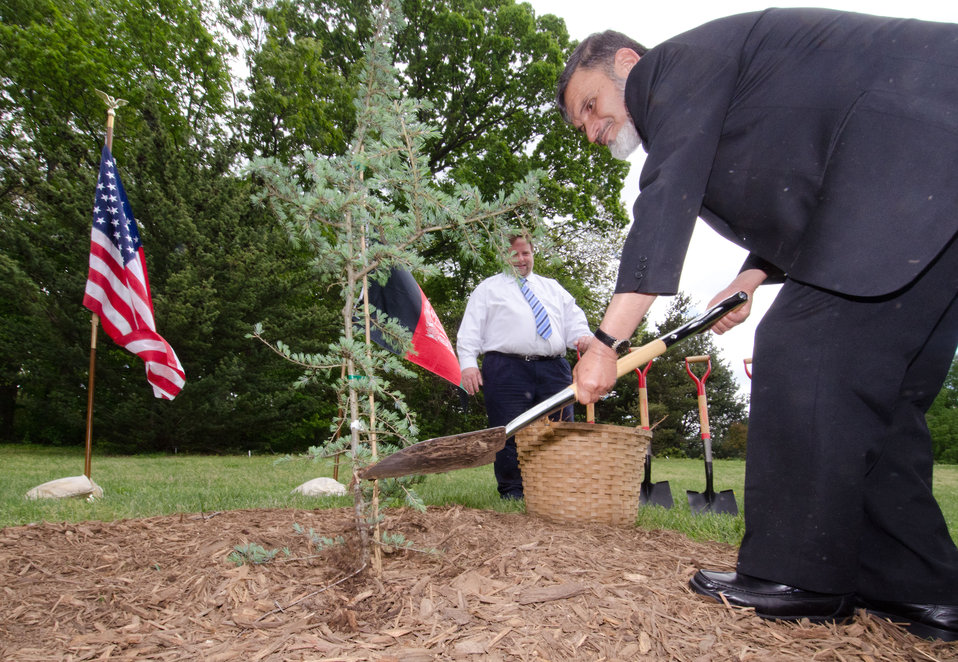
Afghan Ghazni Directorate of Agricultural Irrigation and Livestock Sultan Hossain added the final shovel of mulch during the Arbor Day tree planting of a Cedrus deodara ('Karl Fuchs') at the U.S. National Arboretum, on Friday, April 29, 2011 in Washington, DC.